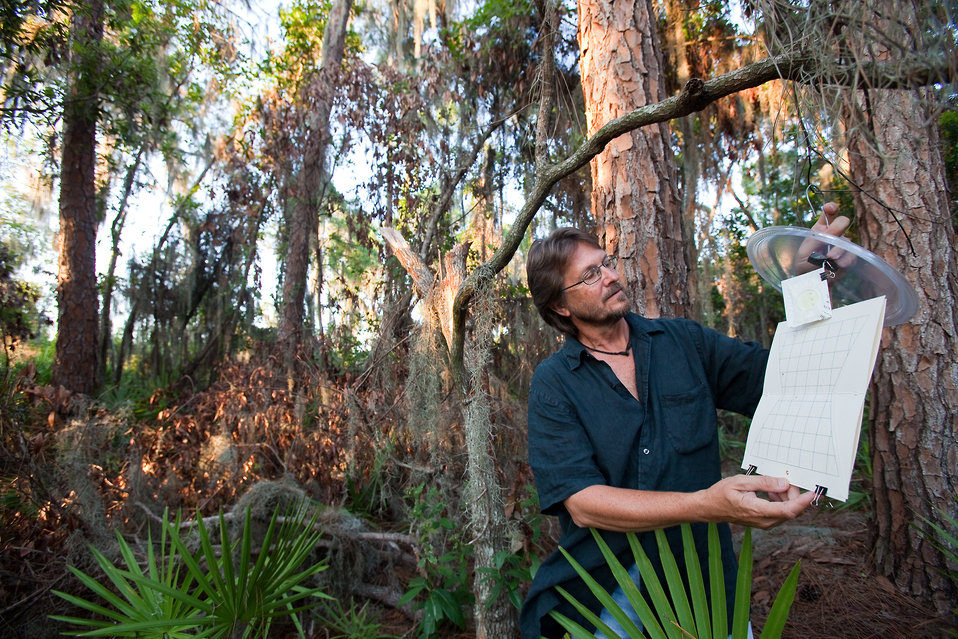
U.S. Department of Agriculture (USDA) Agricultural Research Service (ARS) entomologist Paul Kendra sets up a sticky panel trap baited with an essential oil lure for evaluations of attractants for redbay ambrosia beetled during field trapping studies at Lake June State Park in central Florida on May 21, 2012.